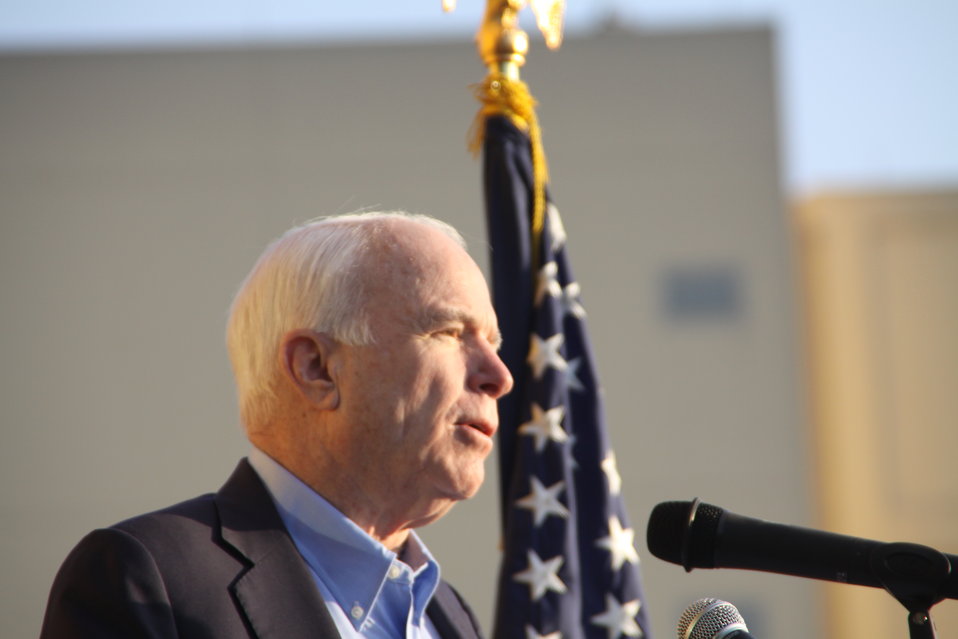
Senator McCain